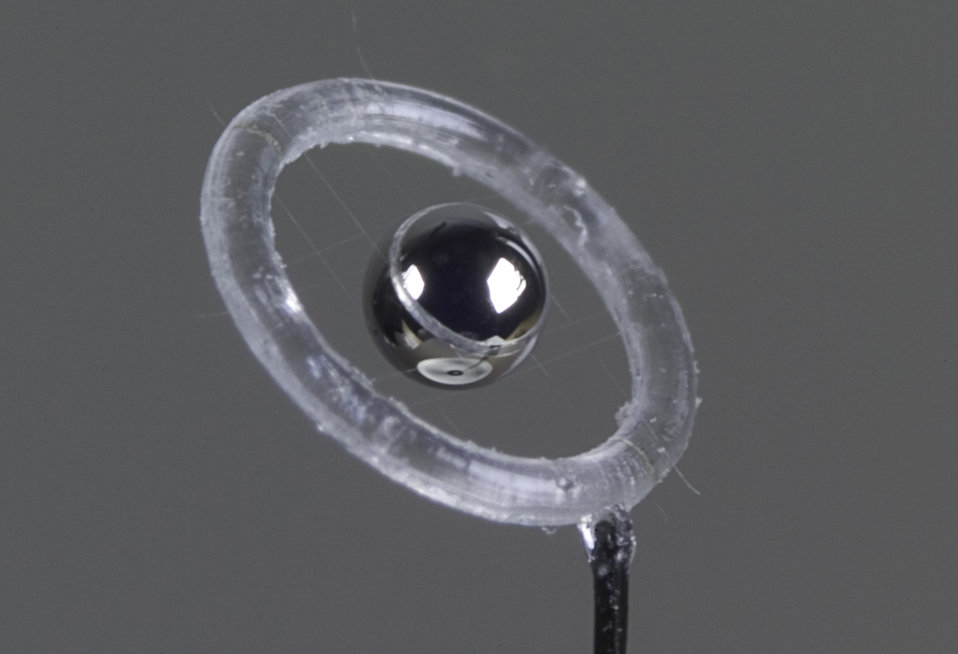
The Saturn target design was developed by Laboratory for Laser Energetics (LLE) and tested on the Omega to explore the possibly of demonstrating ignition on the NIF using the Polar-Direct-Drive (PDD) configuration. The capsule is mounted on a specifically designed ring by means of spider-silk strands.